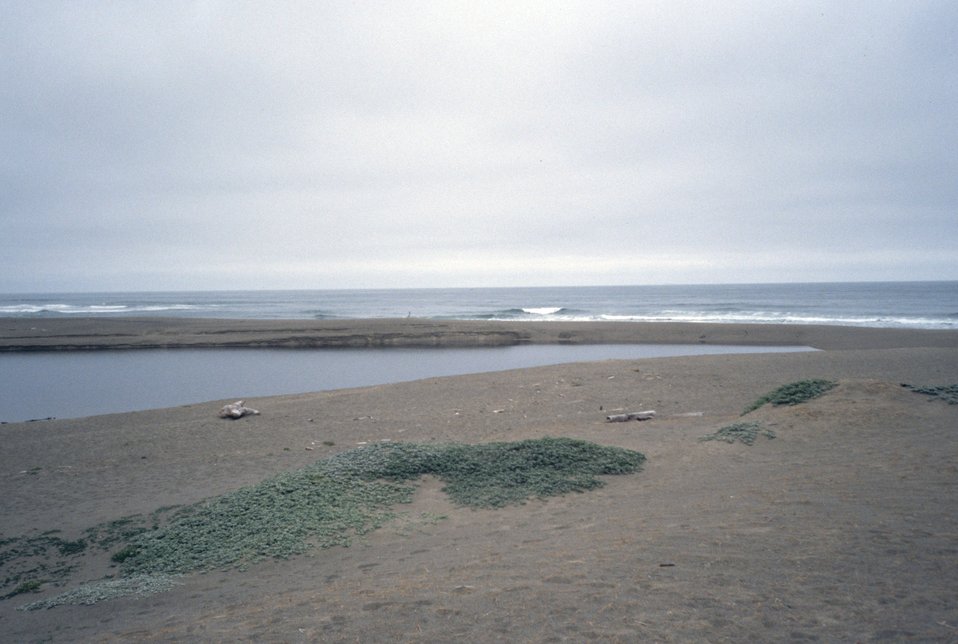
Point Reyes Great Beach